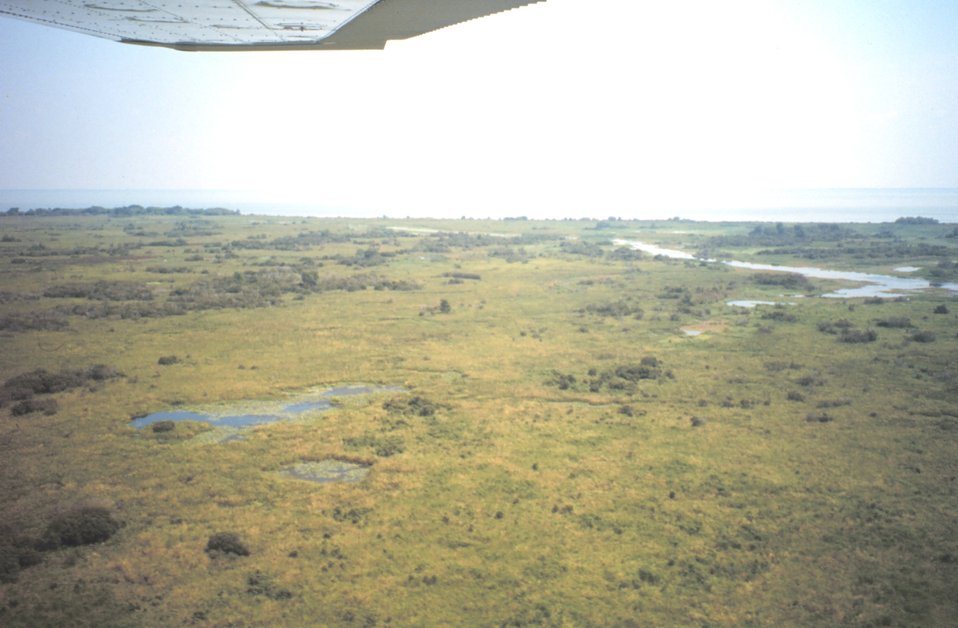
Aerial view of freshwater wetlands. Freshwater wetlands support a higher diversity of plants than do salt marshes.